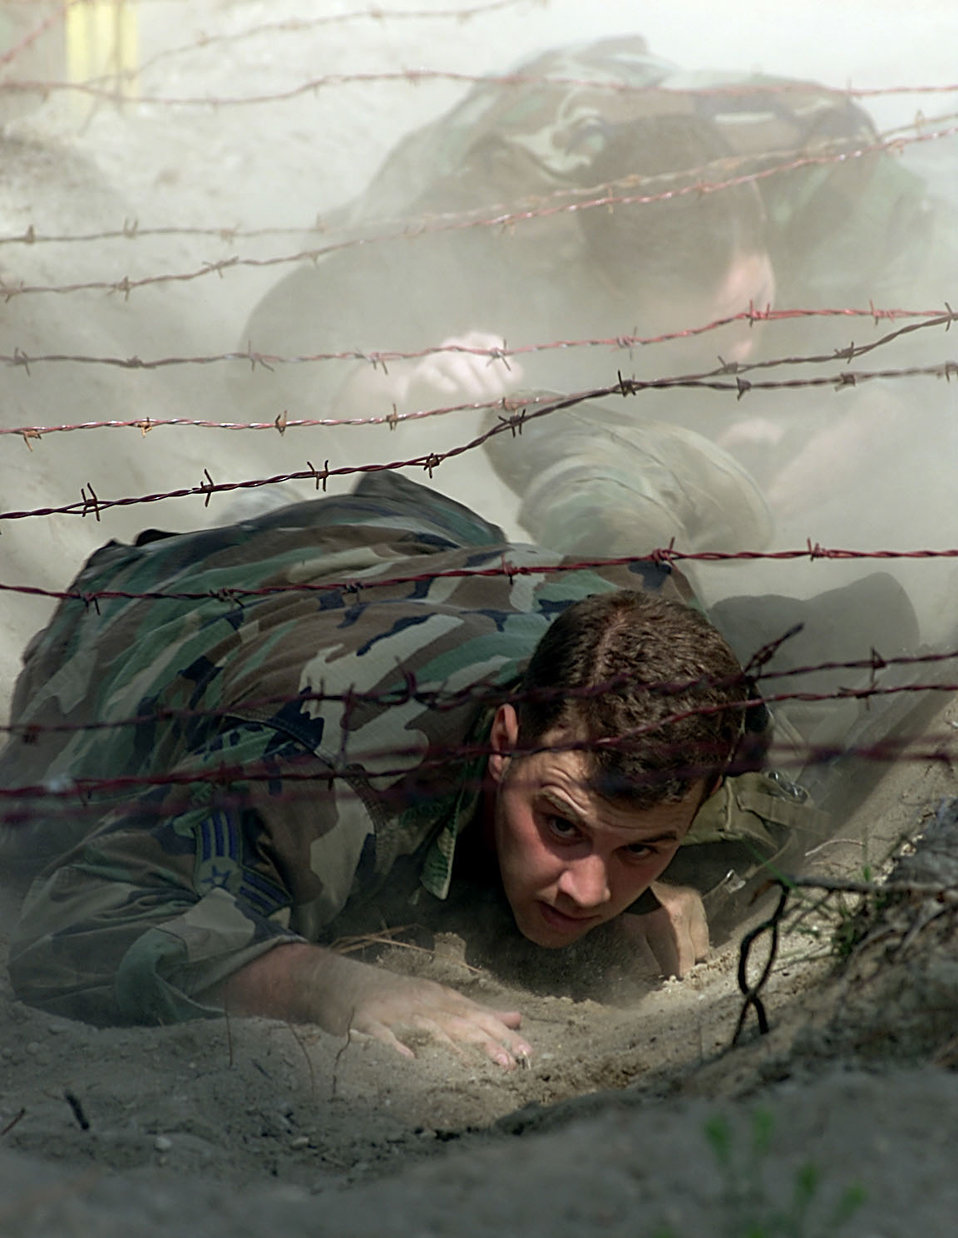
Low crawl

POPE AIR FORCE BASE, N.C., --Senior Airman Micheal Charvat, 22nd Special Tactics Squadron, McChord Air Force Base, crawls under an obstacle during the Special Tactics Endurance Course May 10, 2000. The endurance course consists of 23 obstacles and the team completing the course in fastest time with the fewest penalties wins the event. During Rodeo 2000, teams from all over the world compete in areas including airdrop, aerial refueling, aircraft navigation, special tactics, short field landings, cargo loading, engine running on/offloads, aeromedical evacuations and security forces operations.